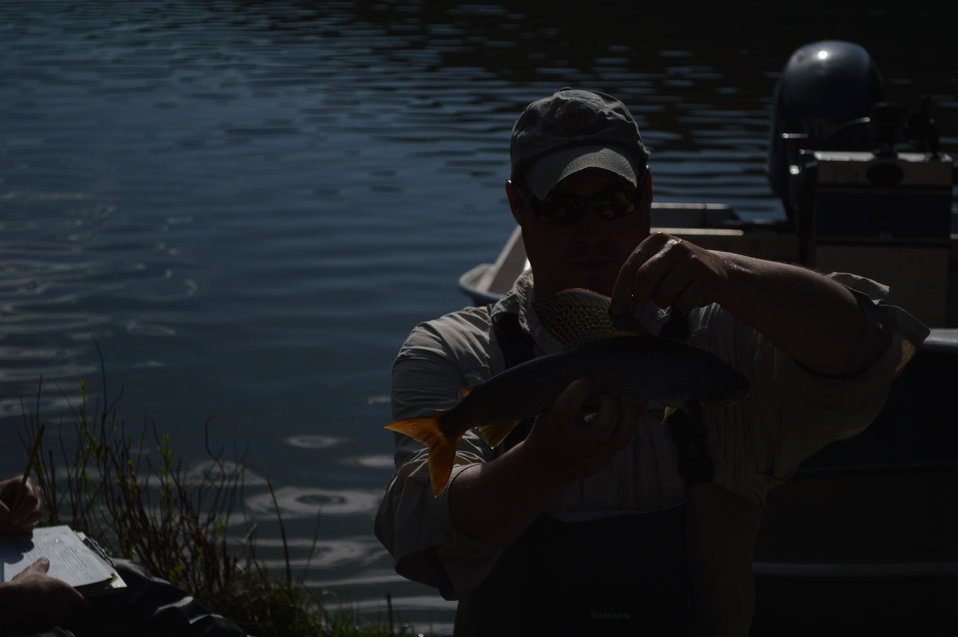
Regional Leadership Visit to Montana 2014